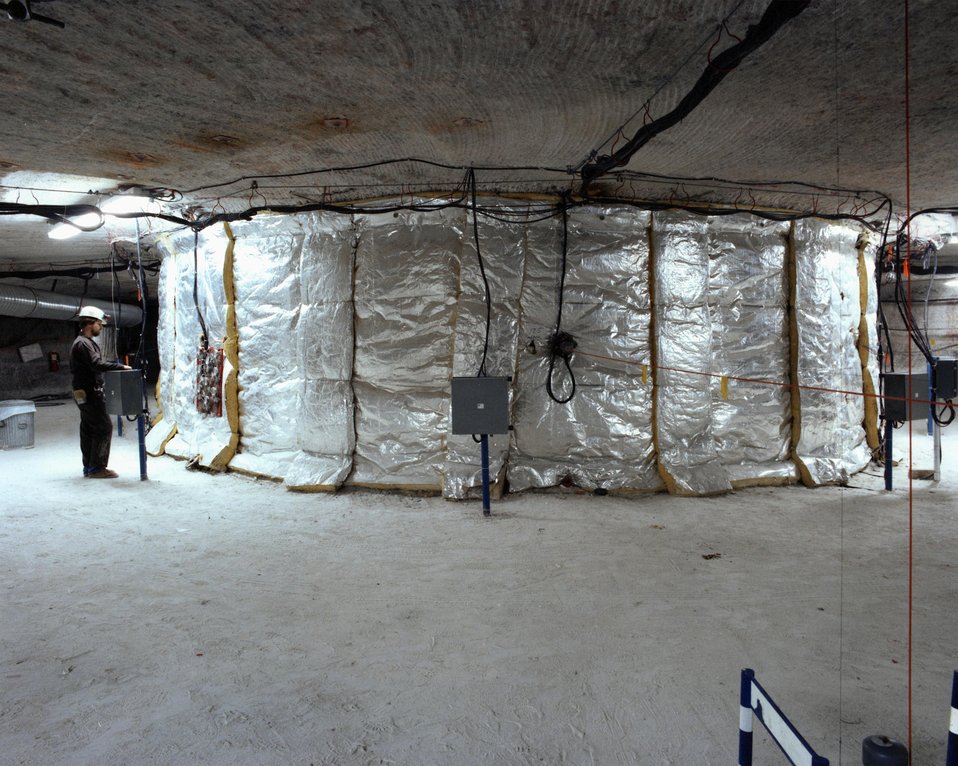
EXPERIMENTAL ROOM H, THE 'ROUND ROOM'.

THE WASTE ISOLATION PILOT PLANT IS A DOE RESEARCH AND DEVELOPMENT FACILITY FOR DEMONSTRATING THE SAFE DISPOSAL OF TRANSURANIC RADIOACTIVE WASTES. TEST SHAFTS HAVE BEEN DRILLED TO A DEPTH OF 2,100 FEET. THE SHAFTS, ONE 6 FEET IN DIAMETER AND THE OTHER 12 FEET IN DIAMETER, PROVIDE AN ENTRY PASSAGE AND VENTILATION TO THE UNDERGROUND SALT ROCK FORMATION THAT IS BEING TESTED TO DETERMINE ITS SUITABILITY FOR RADIOACTIVE WASTE STORAGE. THE 'ROUND ROOM' IS A UNIQUE MINING ACCOMPLISHMENT. THIS DONUT SHAPED ROOM IS BEING HEATED TO DOCUMENT EFFECTS OF HEAT ON THE SALT PILLAR FORMATION.